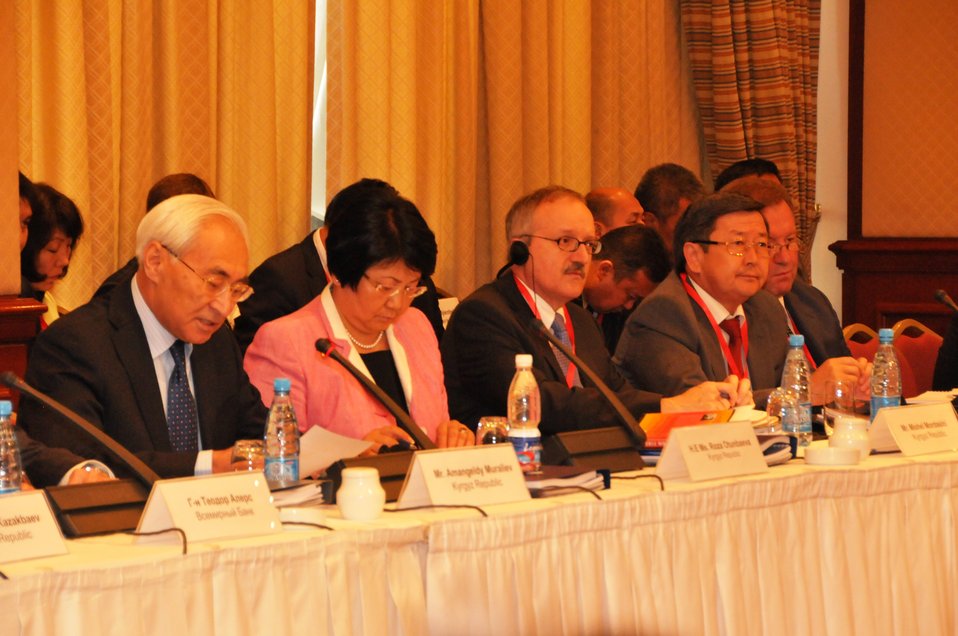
Kyrgyzstan President Otunbayeva Participates in International Donors' Conference for Kyrgyzstan

Kyrgyzstan President Roza Otunbayeva participates in the World Bank's International Donors' Conference for Kyrgyzstan in Bishkek, Kyrgyzstan, on July 27, 2010.